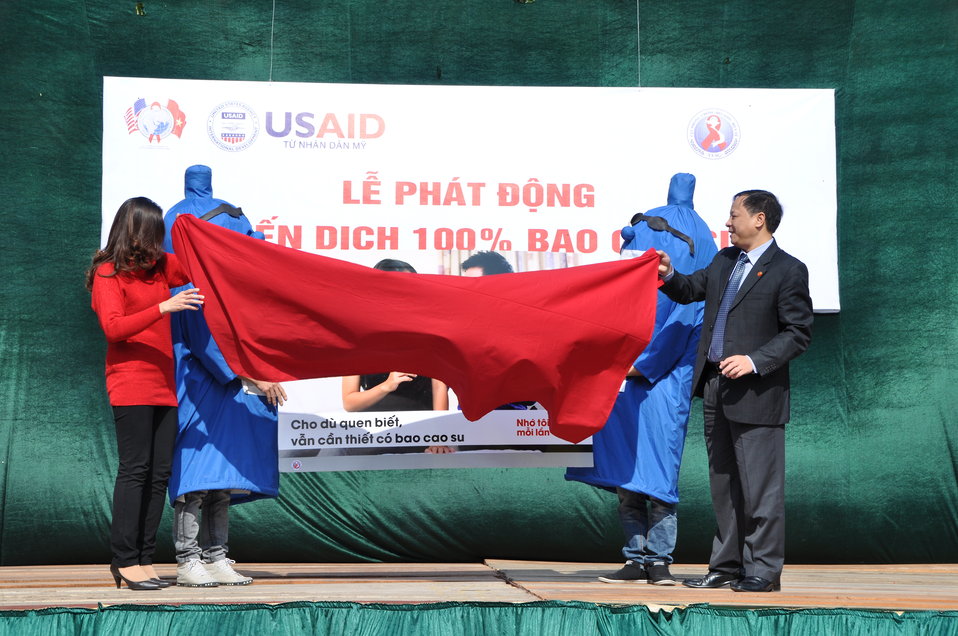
100% Condom Use Campaign Launch, Dec. 2, 2011